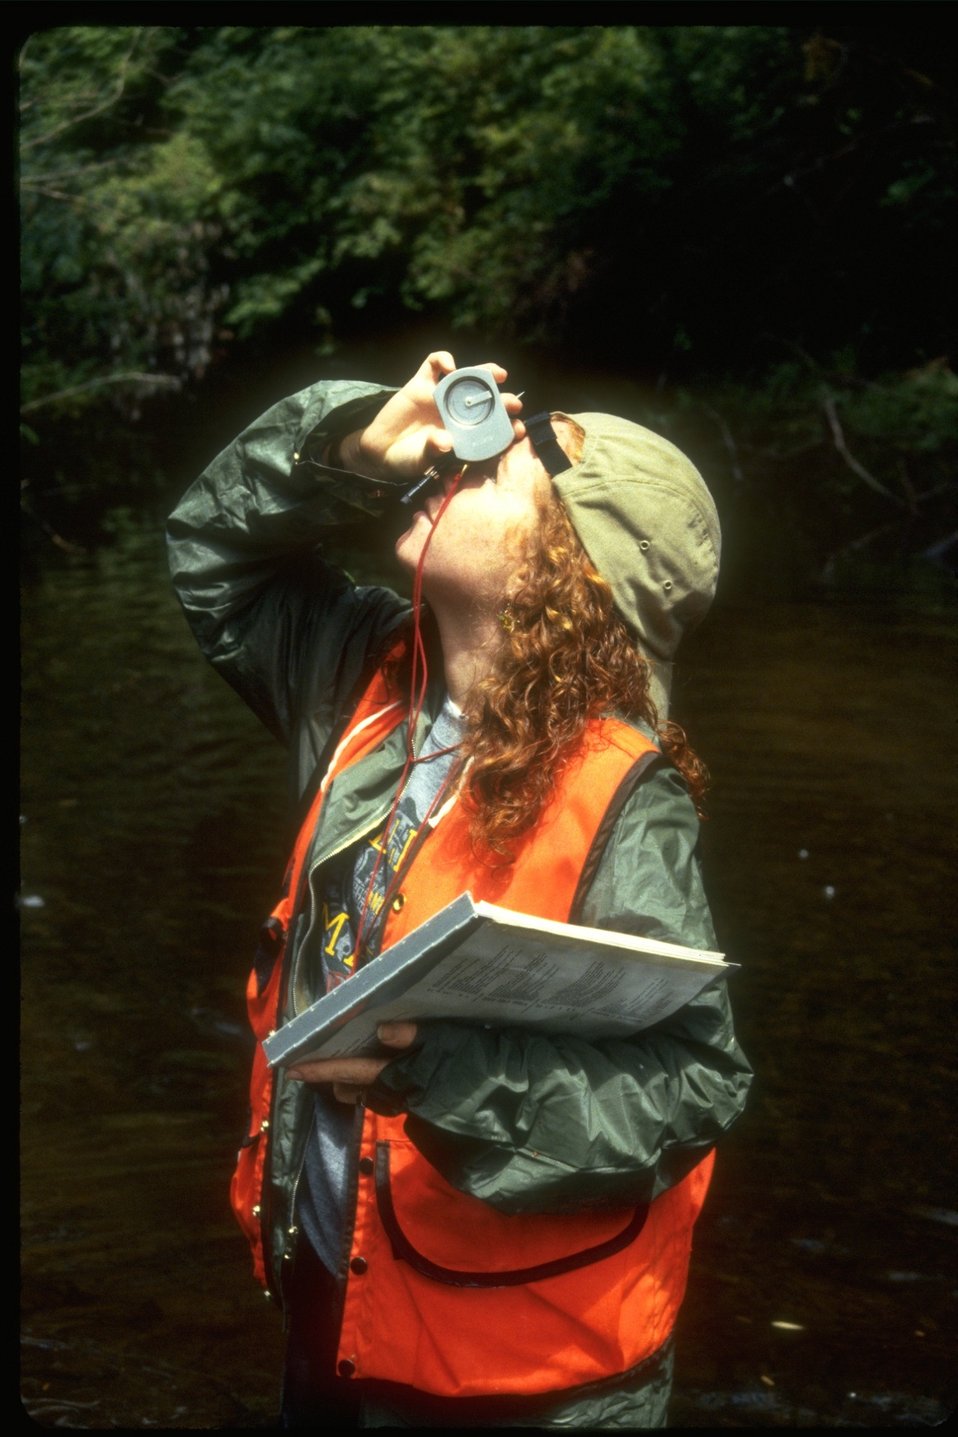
A fisheries volunteer.